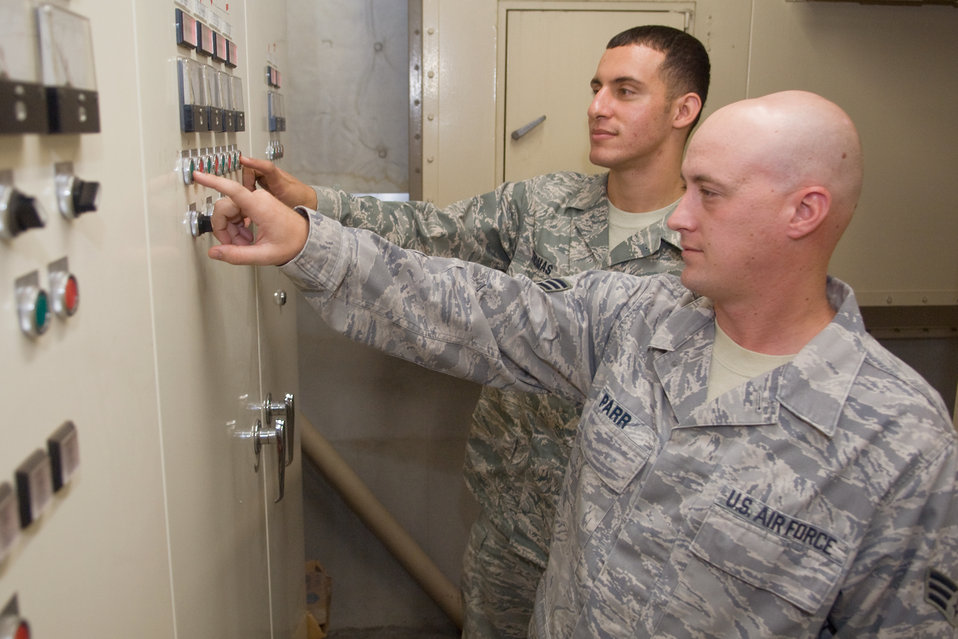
Testing Systems1

Senior Airman David Parr (front) and Senior Airman Christopher Thomas inspect a heating and cooling control panel Oct. 14, 2010 at Yokota Air Base. The testing marks the beginning of the No Heat, No Cool season there. Airman Parr and Airman Thomas are both heating, ventilation and air conditioning technicians with the 374th Civil Engineer Squadron